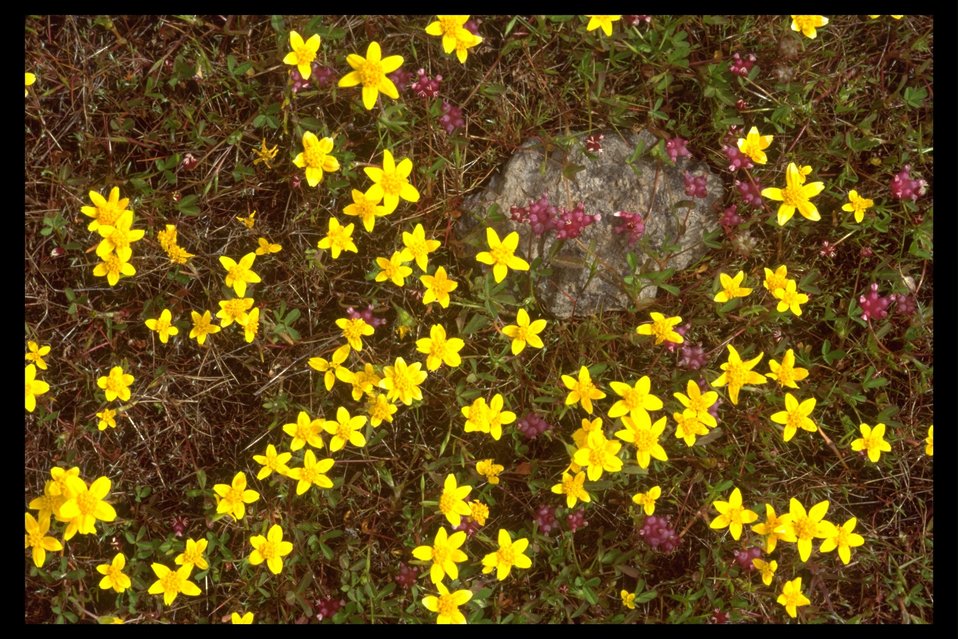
Gold Fields & Poverty Clover (Trifolium depauperatum) at Lower Table Rock.